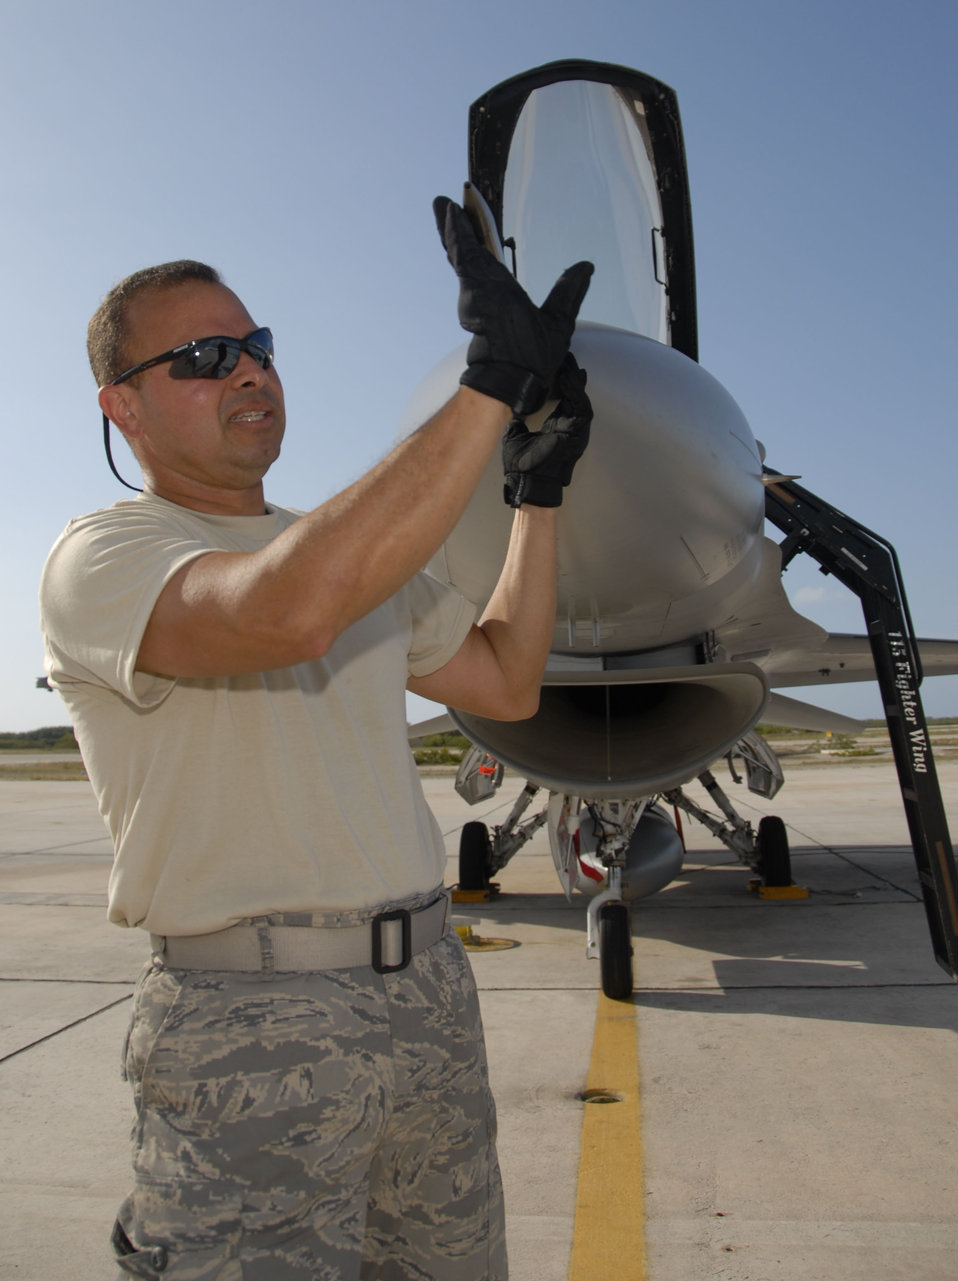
Air Guard, Navy train together

Staff Sgt. Jose Irizarry, a crew chief from the Wisconsin Air National Guard's 115th Fighter Wing in Madison, inspects the pitot tube on an F-16C Fighting Falcon sitting on the ramp at Naval Air Station Key West, Fla., prior to flying a training mission. Aircrews from the 115th FW participated in air-to-air combat skills training along side their naval counterparts from Strike Fighter Squadron 2, NAS Lemoore, Calif., during a two-week training exercise.